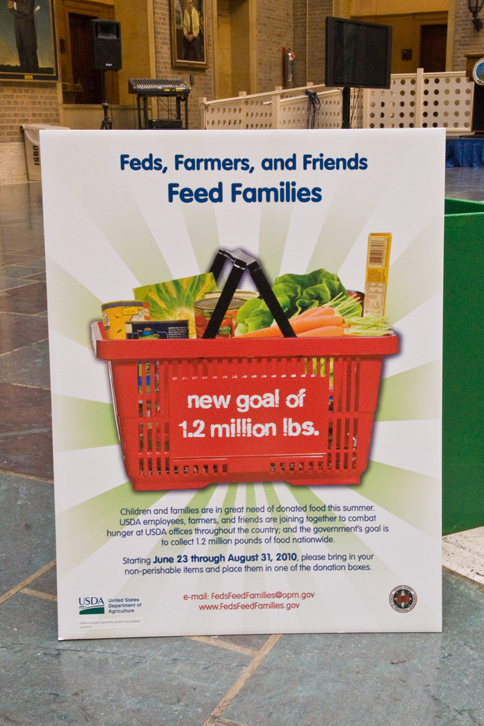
One of many posters advertising the “Feds, Farmers and Friends Feed Families (F5) Summer Food Drive” event held at the United States Department of Agriculture in Washington, DC, Friday, July 23, 2010. The food drive is a summer long event for United States Department of Agriculture employees to help combat hunger in the United States. USDA Photo 10di1444-13.